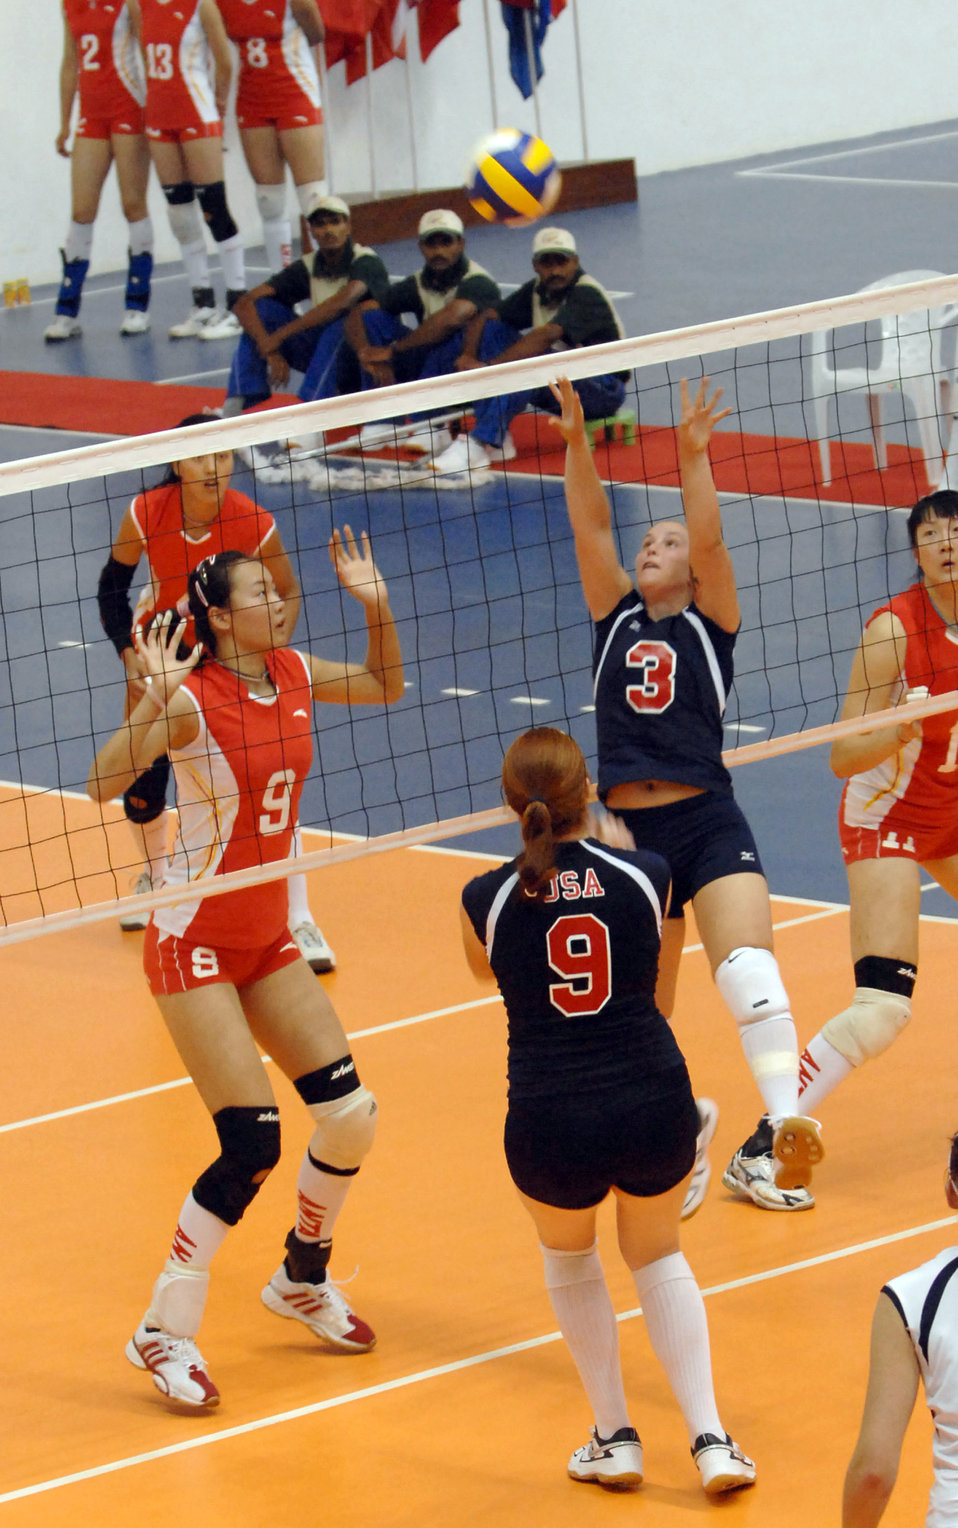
4th CISM World Military Games

Air Force 1st Lt. Kristin Huitt sets the ball for Spc. Sarah Lusk during the U.S. women's first volleyball game at the Military World Games in Hyderabad, India. The U.S. women fell to the Chinese team in three games, 25-15, 25-11, 25-7. The Conseil Internationale du Sport Militaire's Military World Games event is the largest international military Olympic-style event in the world. In this year's fourth edition of the Games, 103 countries and more than 5,000 athletes are competing Oct. 14 to 21 in boxing, diving, soccer, handball, judo, military pentathlon, parachuting, sailing, shooting, swimming, volleyball and track and field. The purpose of the Military World Games is to promote